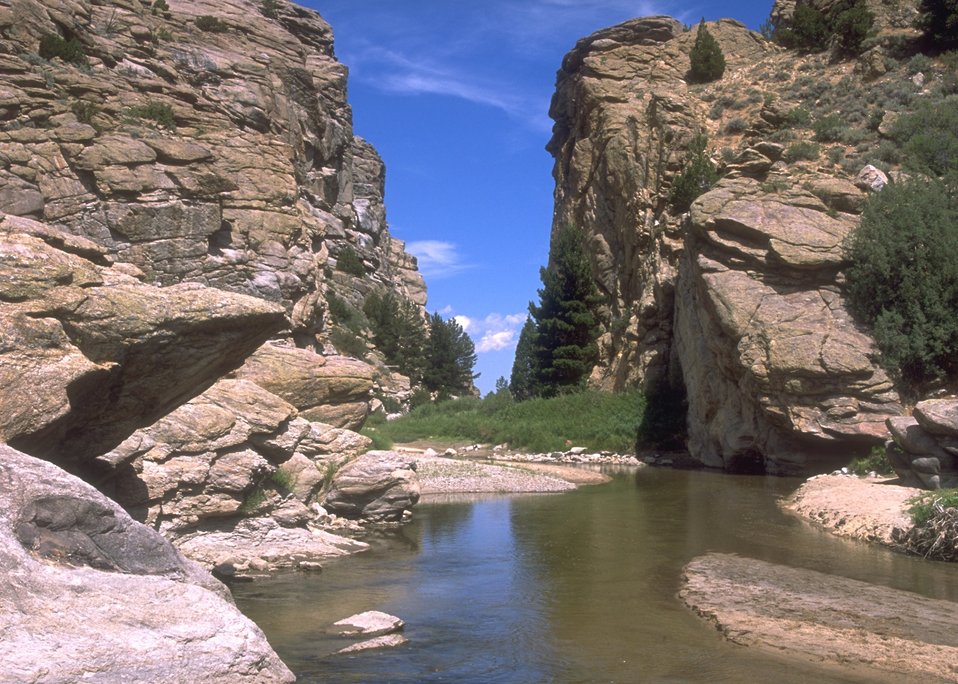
Devil's Gate historic site, Rawlins Field Office.